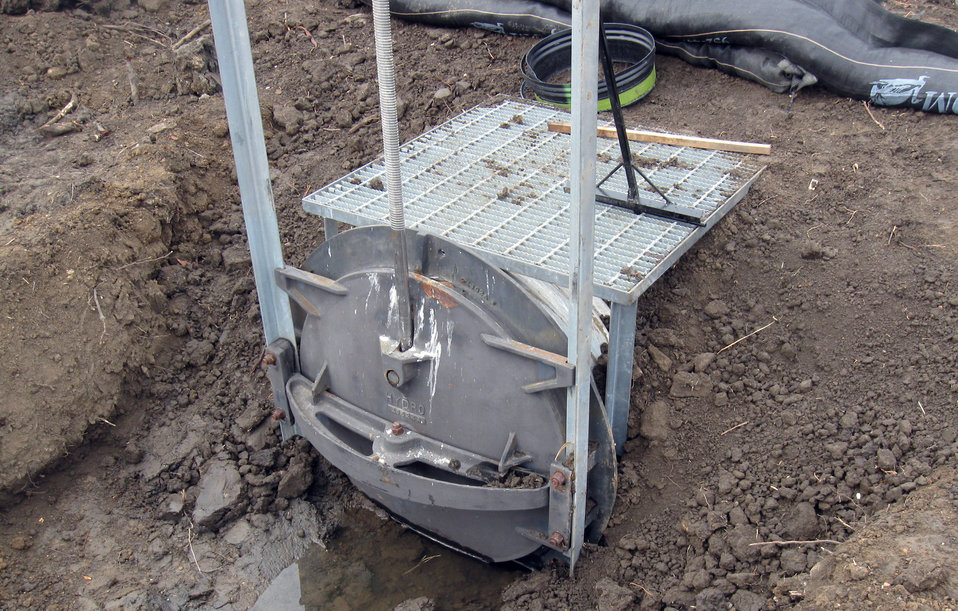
Slide gates like this can be raised or lowered to adjust water levels in the marsh.